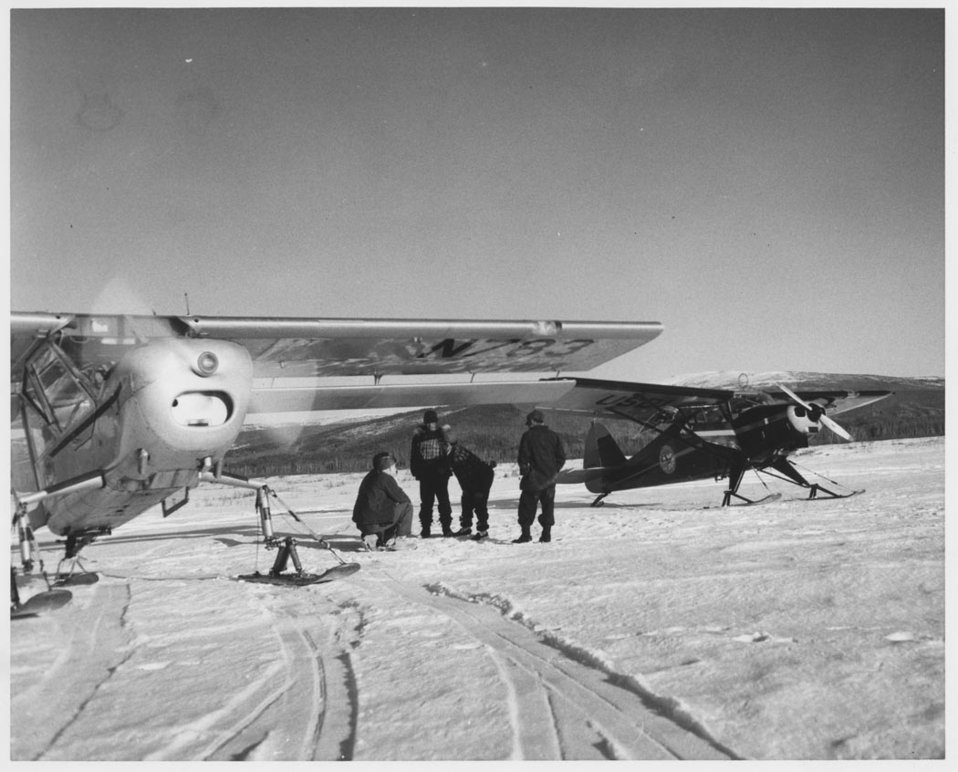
Agents Tremblay and Allen at Minto Flats